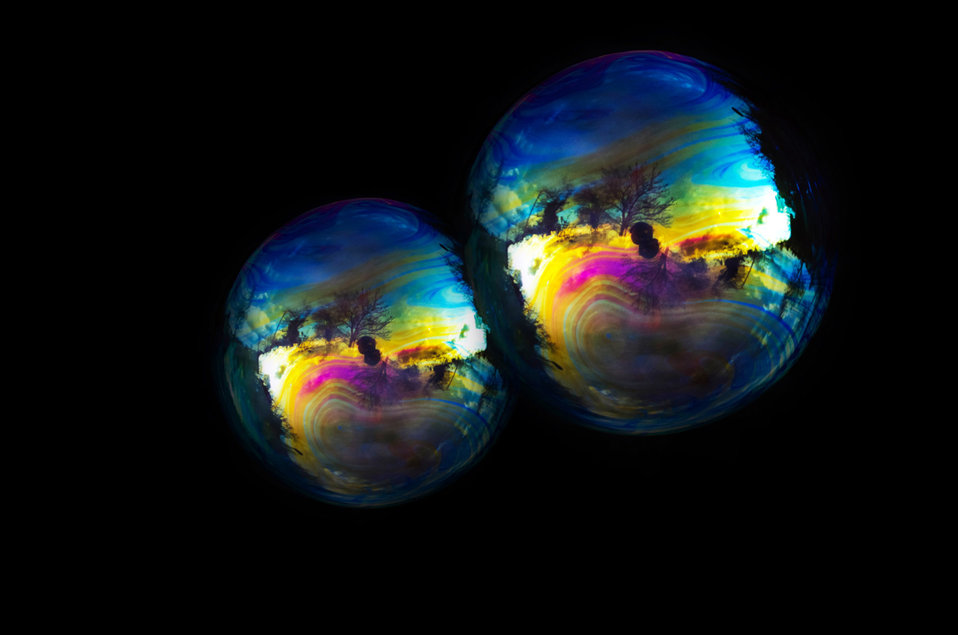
Bubbles - macro.